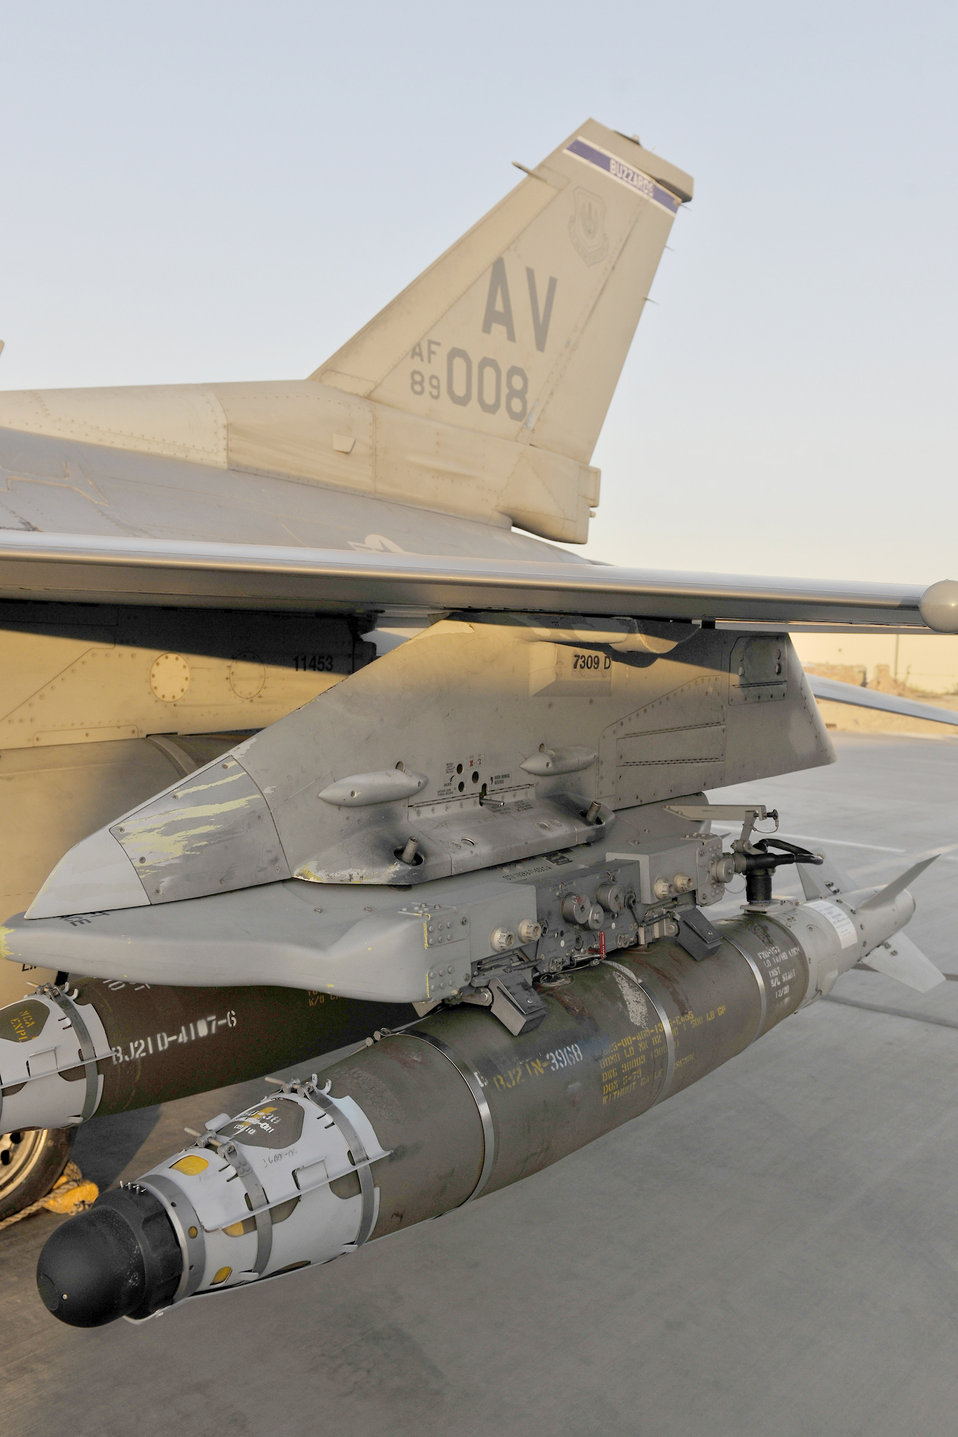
GBU-54

A guided bomb unit-54rests on the wing of a F-16 Fighting Falcon Oct. 1, 2010, at Bagram Airfield, Afghanistan. The GBU-54 is the Air Force's newest 500-pound precision weapon, equipped with a special targeting system that uses a combination of Global Position System and laser guidance to accurately engage and destroy moving targets.